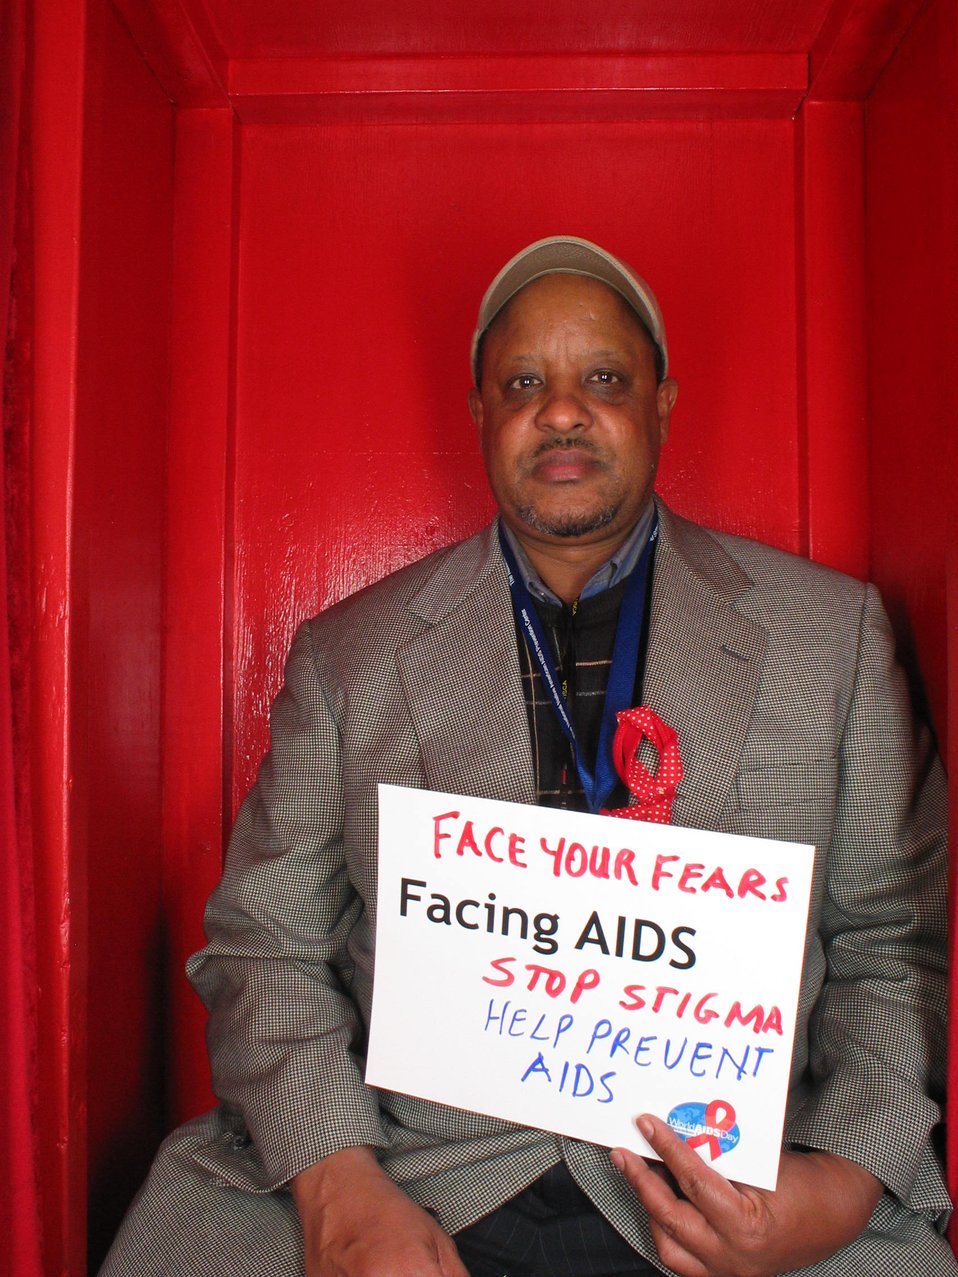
Face your fears. Facing AIDS stop stigma. Help prevent AIDS